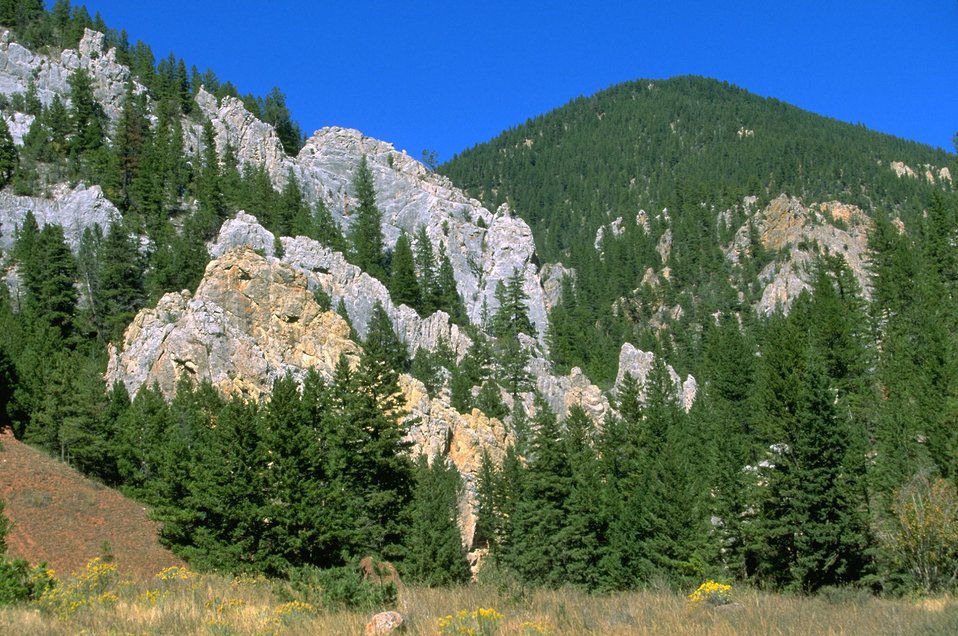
Rattler Gulch-Limestone Cliffs ACEC (area of critical environmental concern)